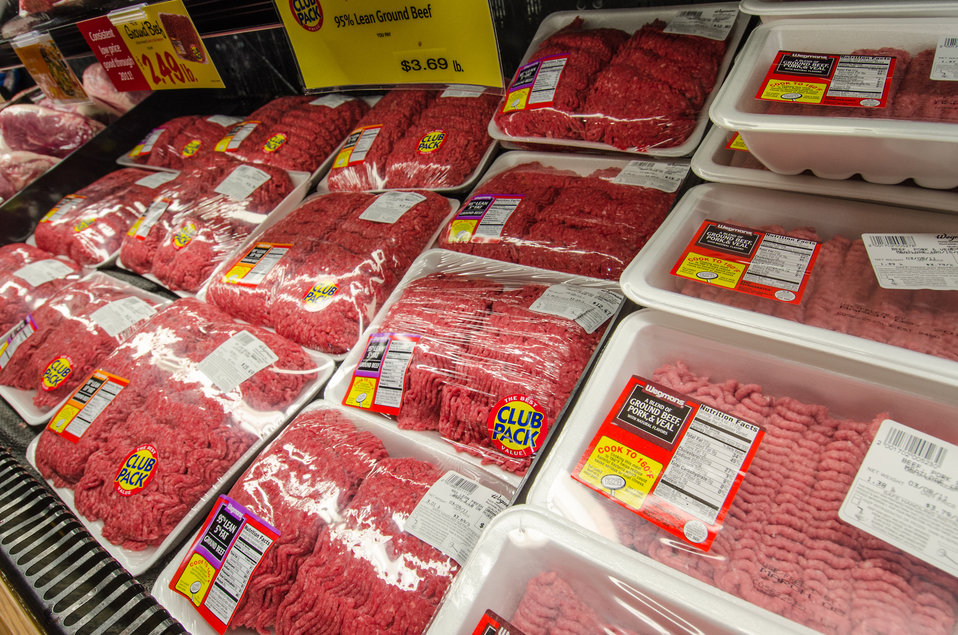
Meat products at a grocery store in Fairfax, Virginia, on March 3, 2011.